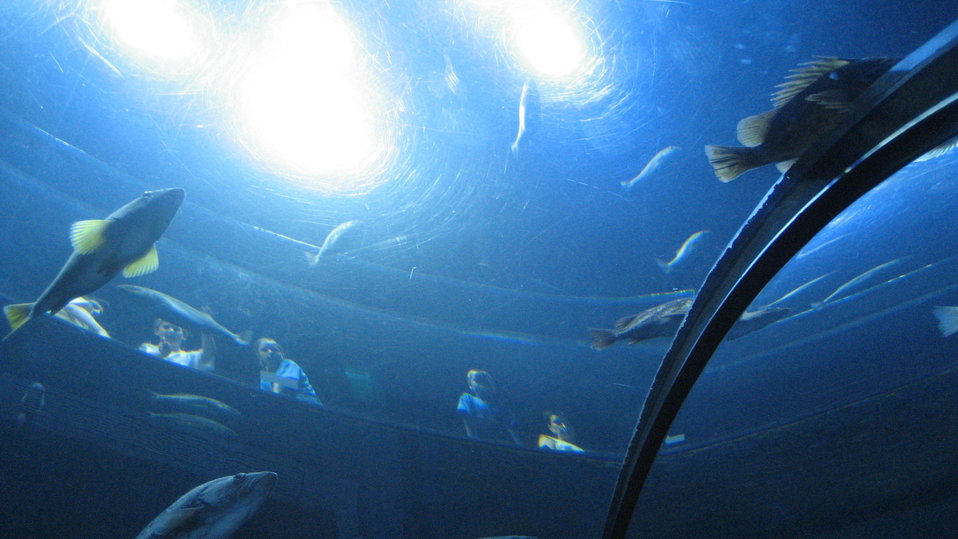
Parc Aquarium Du Quebec, Quebec City, Canada